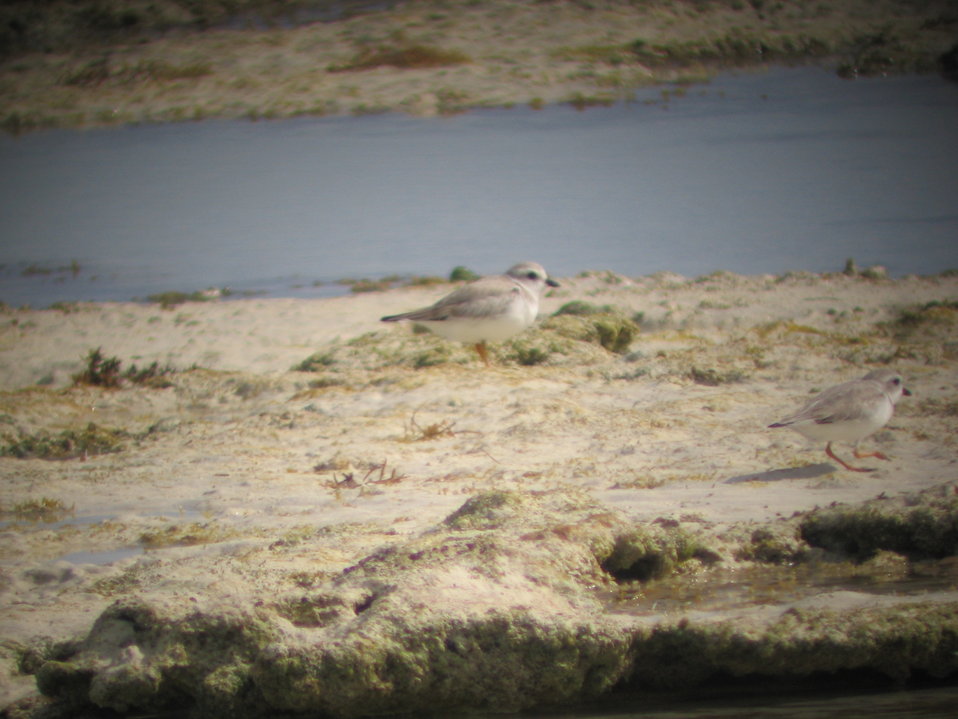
Piping plovers foraging in rocky intertidal zone

Photo taken at South Andros Island.